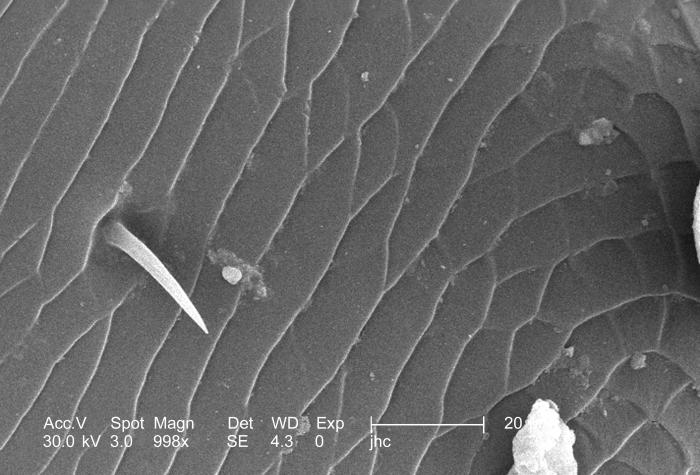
Magnified 998x, this scanning electron micrograph (SEM) depicted some of the ultrastructural morphologic features displayed on the surface of one of a carpenter bee's, Xylocopa virginica two antennae. This particular bee was found deceased on the grounds of the Decatur, Georgia suburbs, an area where these insects are quite common. Carpenter bees can be quite a nuisance, for they are well known as wood-borers, and can create many unsightly holes in a home's wooden components.